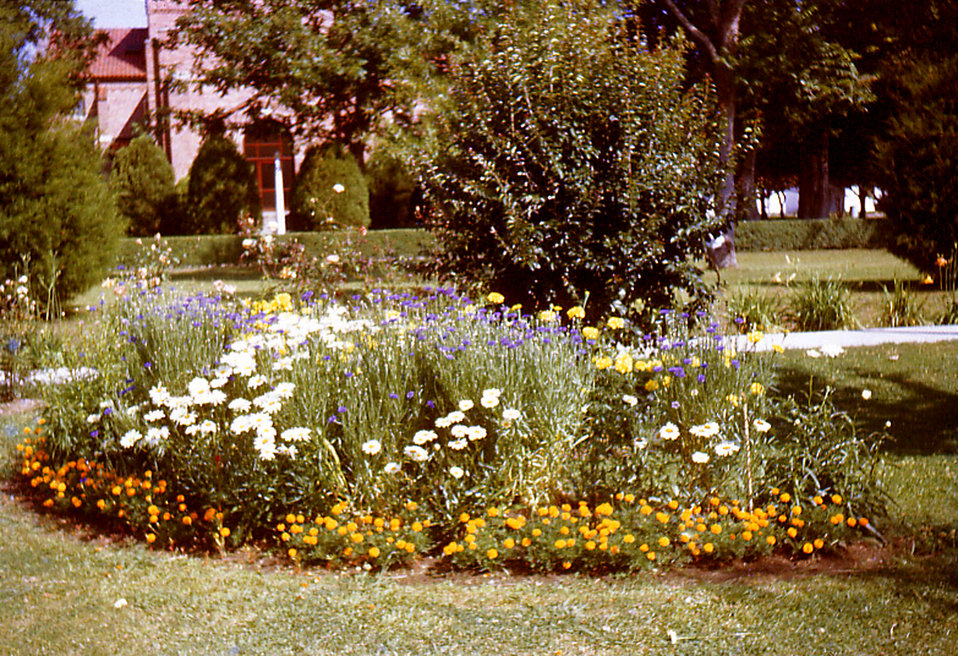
Depicted in this historic image was one of the Carville, Louisiana Leprosarium's community flower gardens that was maintained by the hospital staff. However, much of the picturesque landscaping was cared for by hospital patients, some of whom were quite adept at gardening. Being that the patients were for the most part quarantined, and therefore, sequestered from the surrounding society, participation in outdoor activities such as gardening, was enjoyed by all patients, as well as staff members.